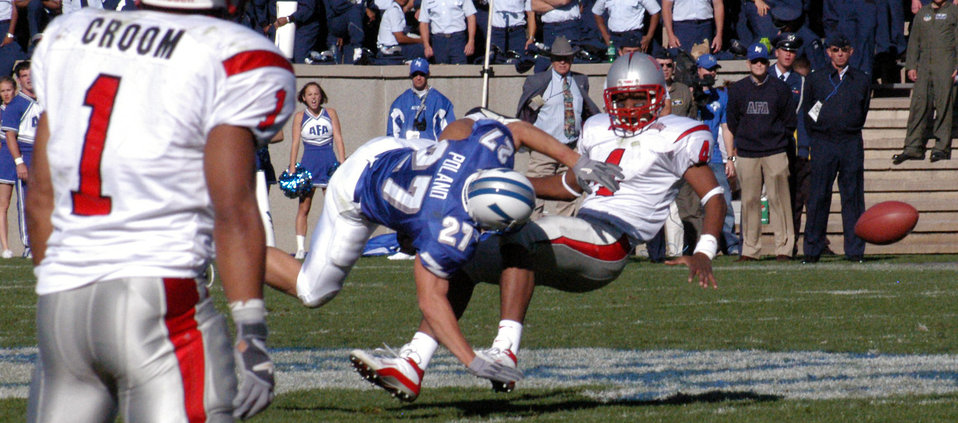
UNLV at academy

U.S. AIR FORCE ACADEMY, Colo. -- U.S. Air Force Academy defensive back Dennis Poland drills a University of Nevada, Las Vegas, receiver as he attempts to make a catch across the middle of the field. Poland and the rest of the Falcon defense knocked the wind out of the UNLV passing game holding them to 250 total yards.